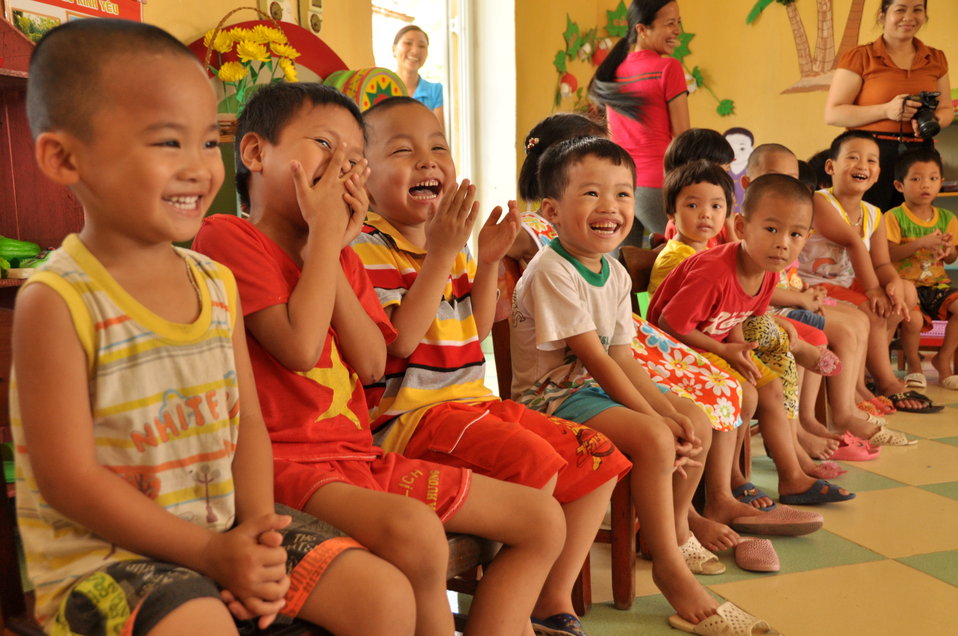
USAID Delivers Deworming Medication to Kindergartners in Nam Dinh Province

Children of Vietnam's Nam Dinh Province receive deworming medicine in a program supported by USAID and World Vision Australia.
June 1, 2013